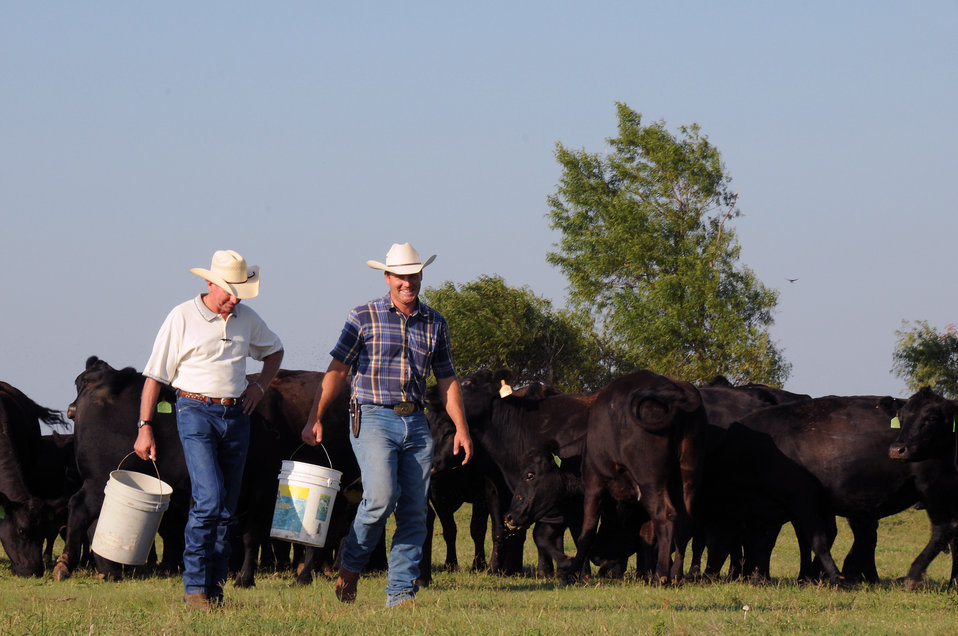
New young farmer Steve Burris feeds the Angus cattle on his farm on August 13, 2009. Burris has always been a strong believer that farms should remain in the family, passed down from generation to generation. His conviction became a reality for his own family recently when his father-in-law decided to retire after 69 years, and to sell Burris the property his family had grown up on and farmed. Burris decided to apply at his local U.S. Department of Agriculture (USDA) Farm Service Agency (FSA) county office in McLoud, Oklahoma for both a Beginning Farmer and Rancher Direct Operating Loan (DOL) and Ownership Loan (OL). Due to the passage of the American Recovery and Reinvestment Act (ARRA) Burris received his loan in record time. The DOL helped him purchase the existing farm equipment, including a tractor and creep feeder, from his father-in-law and to pay off the remaining debt he held on the farm equipment he already owned. He purchased 65 cows from a private seller in a neighboring town and the loan allowed him to use some of his personal savings to purchase feed, and fertilizer for his winter wheat crop from a local vender. Burris’s OL was also approved, which enabled him to purchase the farm's existing home and 55 acres from his father-in-law. Burris was a high school agricultural education instructor for seven years, having earned his bachelors degree in agriculture science from Oklahoma State University. He is happy to be more involved in daily farming and splits his time breeding cattle with his wife Kathy and four children, and working as an agent for the local Farmer's Insurance Group office.